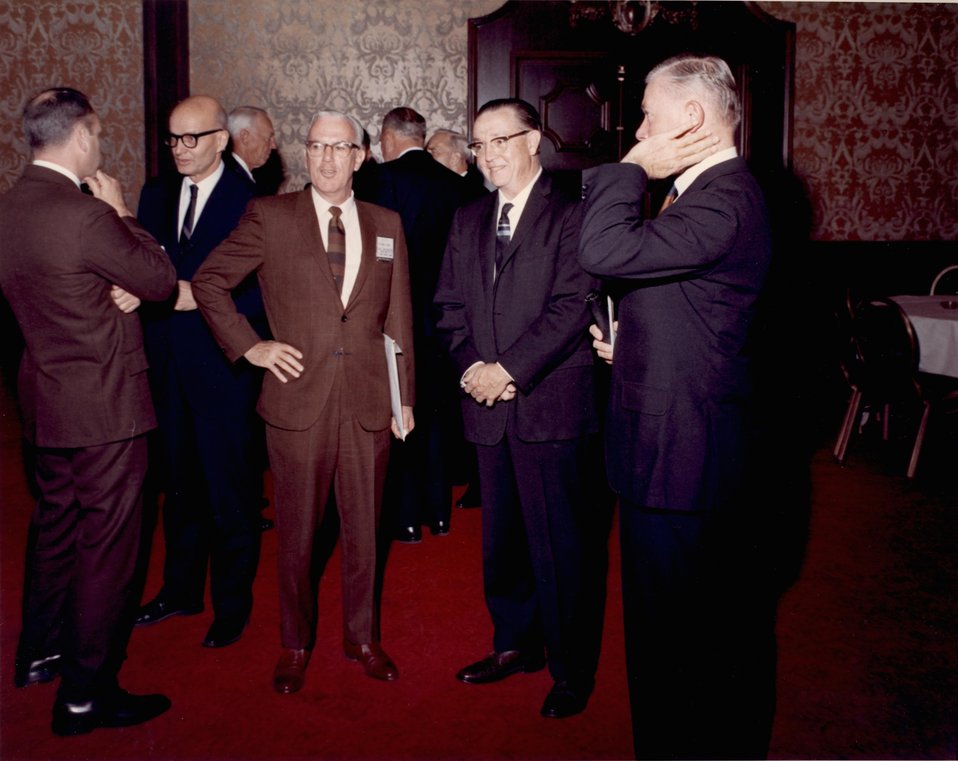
Fermi Award. Recipient: Walter Zinn. Date: Dec 2, 1970.